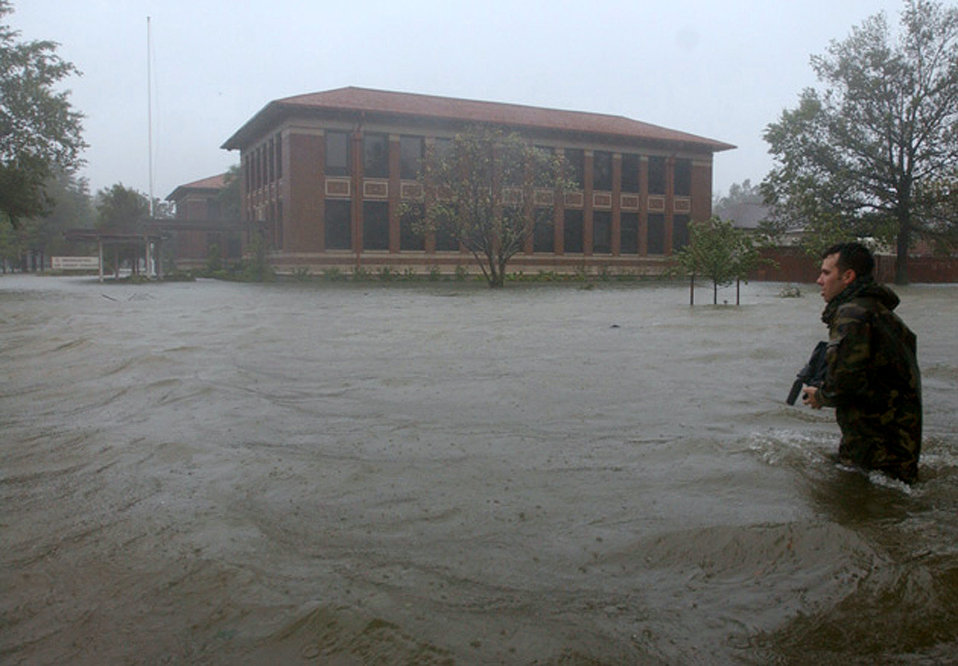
Roughin' the storm

LANGLEY AIR FORCE BASE, Va. -- A videographer from the 1st Communications Squadron here braves the water and wind of Hurricane Isabel to document damage caused by the storm near the Air Combat Command headquarters building.